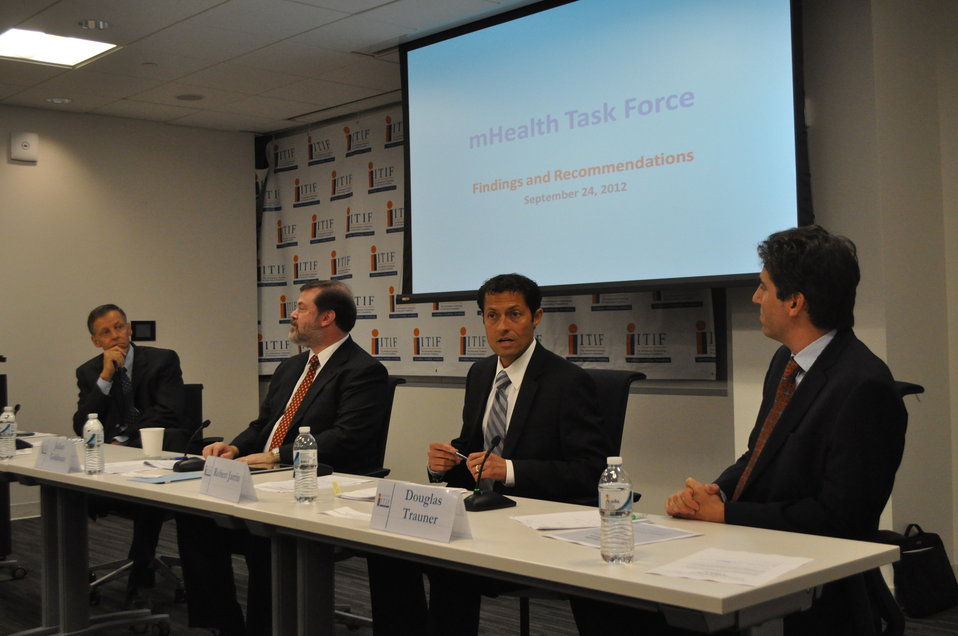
mHealth Task Force Findings and Recommendations Event - DSC 0674